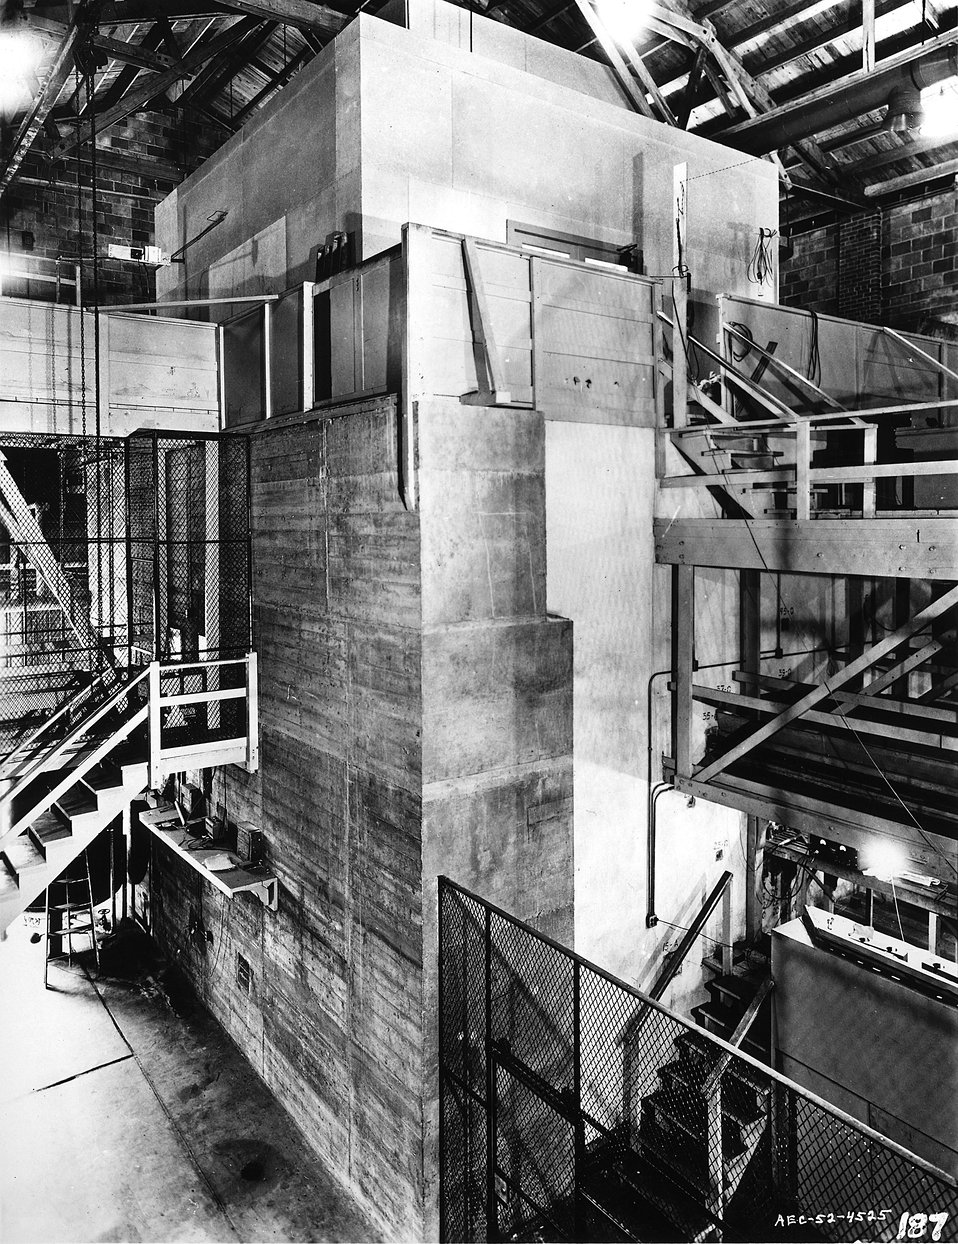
Graphite Reactor at the Argonne Lab. c.1952